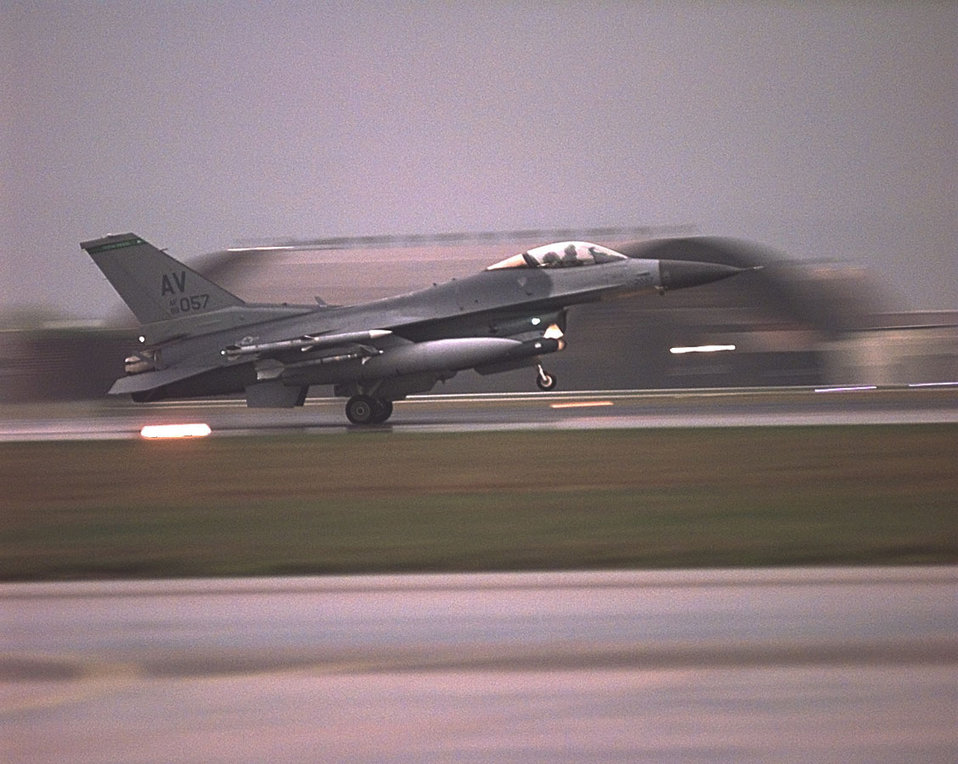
Mission complete

FILE PHOTO -- An F-16C Fighting Falcon from the 555th Fighter Squadron, Aviano Air Base, Italy, lands after flying a mission against targets in Yugoslavia on Wednesday, April 7, 1999. The mission was part of NATO Operation Allied Force. The F-16 Fighting Falcon is a compact, multirole fighter aircraft. It is highly maneuverable and has proven itself in air-to-air combat and air-to-surface attack. It provides a relatively low-cost, high-performance weapon system for the United States and allied nations.